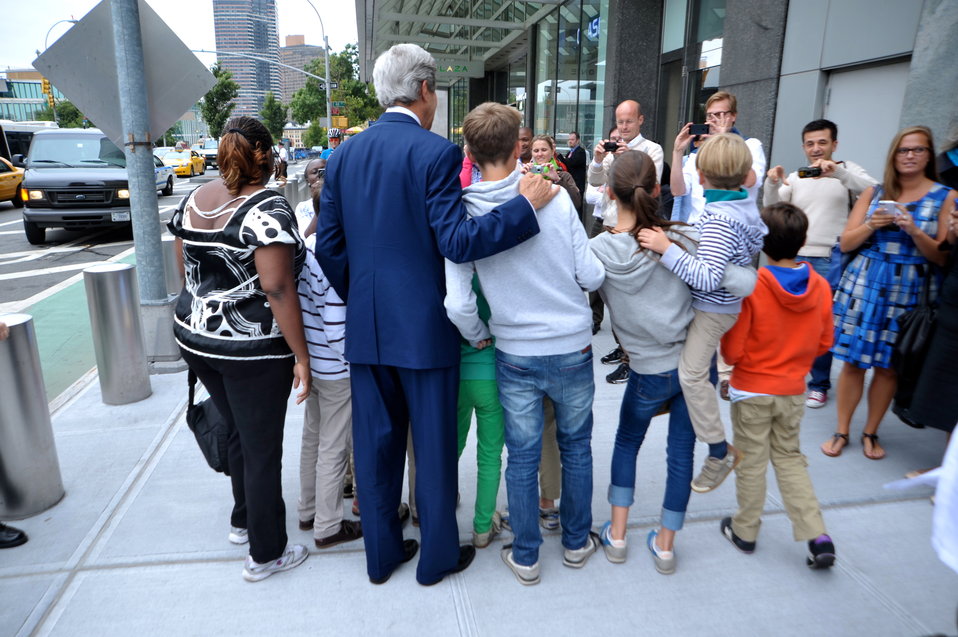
Secretary Kerry Poses for a Photo With German Tourists

U.S. Secretary of State John Kerry poses with a group of German tourists outside the United Nations headquarters building in New York City on July 25, 2013.